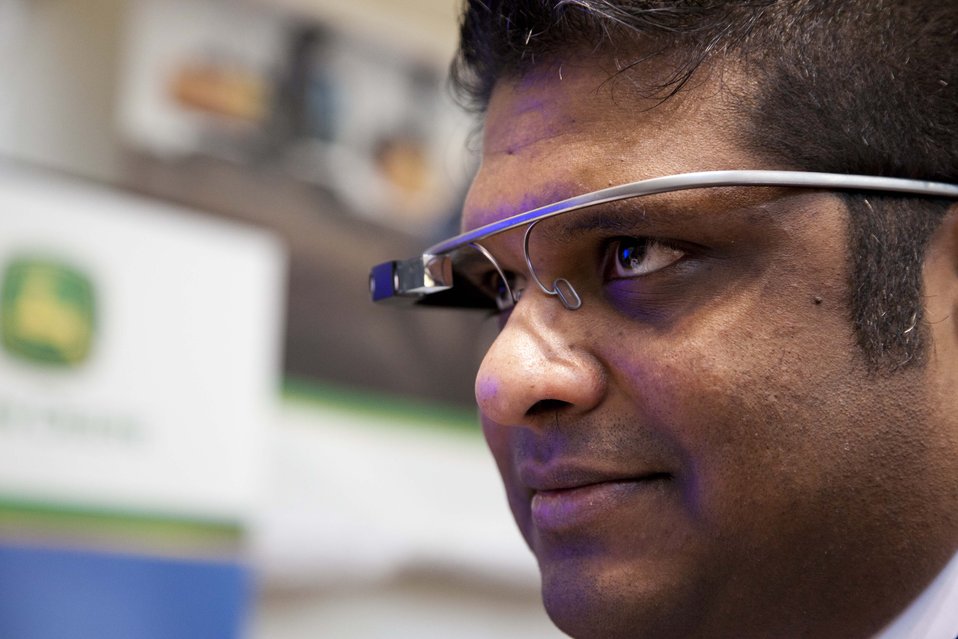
AEMC Summit

Google Glass is another technology that has the potential to change manufacturing by increasing efficiency and productivity on the manufacturing line. Pictured here is a Deere and Company employee who is demonstrating a Google Glass that workers on the assembly line might wear to provide assembly instructions.